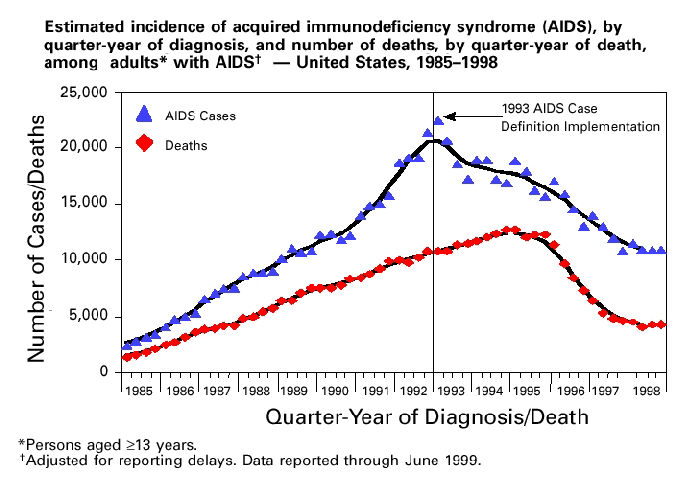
Incidence of AIDS cases and deaths in the United States, 1985-1998.